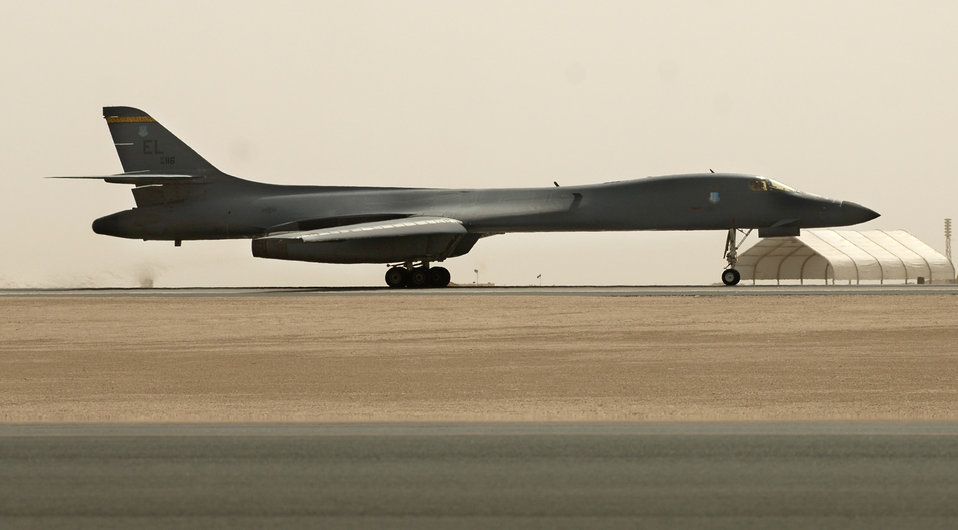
Airpower summary for Sept. 13, 2007

A B1-B Lancer takes off from a base in Southwest Asia on a mission to support coalition forces fighting in Iraq.